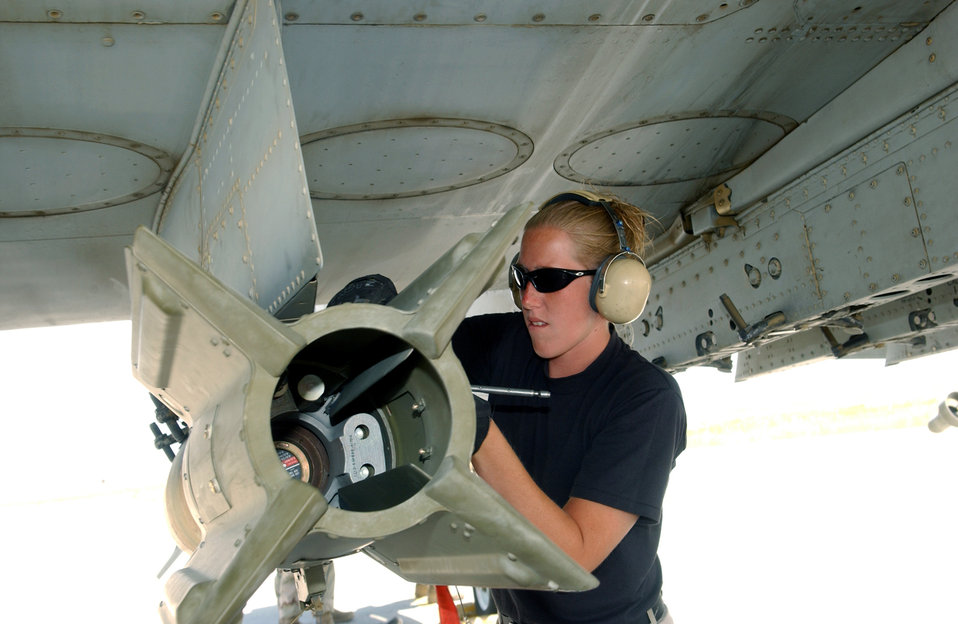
Warthog bite

BAGRAM AIR BASE, Afghanistan -- Airman 1st Class Stacy Wilson safes a guided bomb after an A-10 Thunderbolt II mission. She is assigned to the 354th Expeditionary Aircraft Maintenance Squadron.